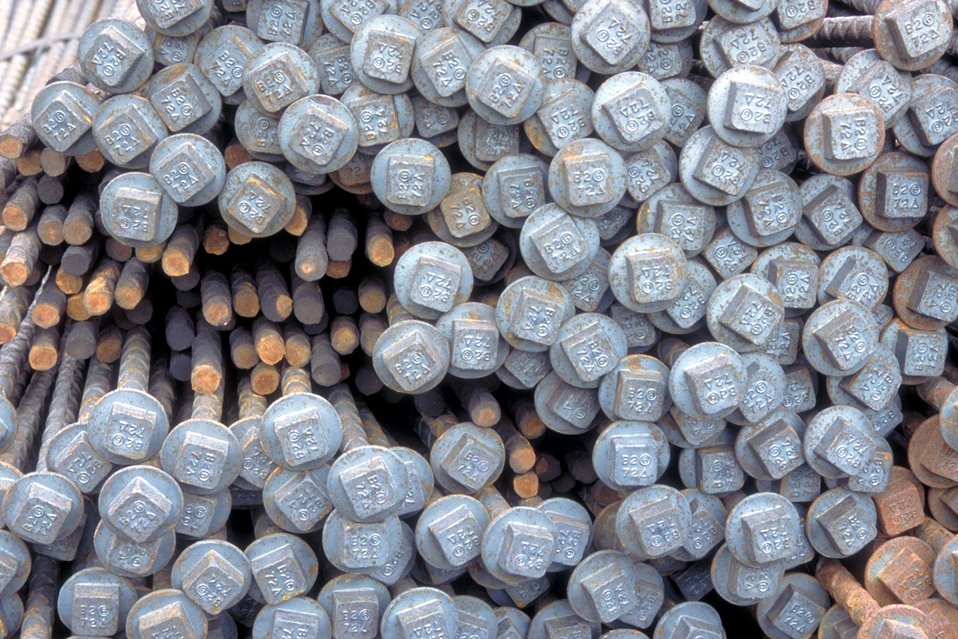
Coal production near Price, Utah.